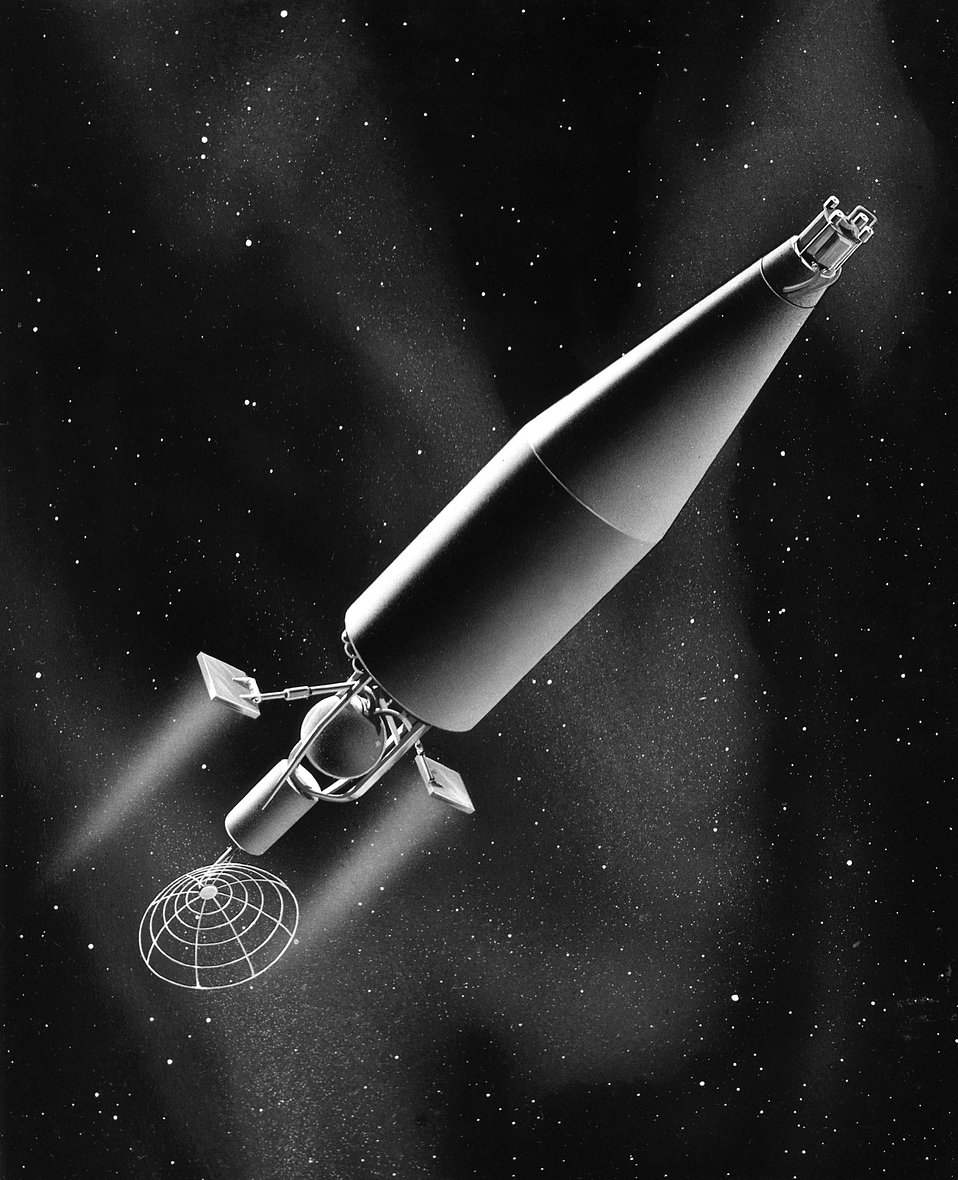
Artist's concept of the SNAP 8 system used as a power source for an ion propulsion vehicle.